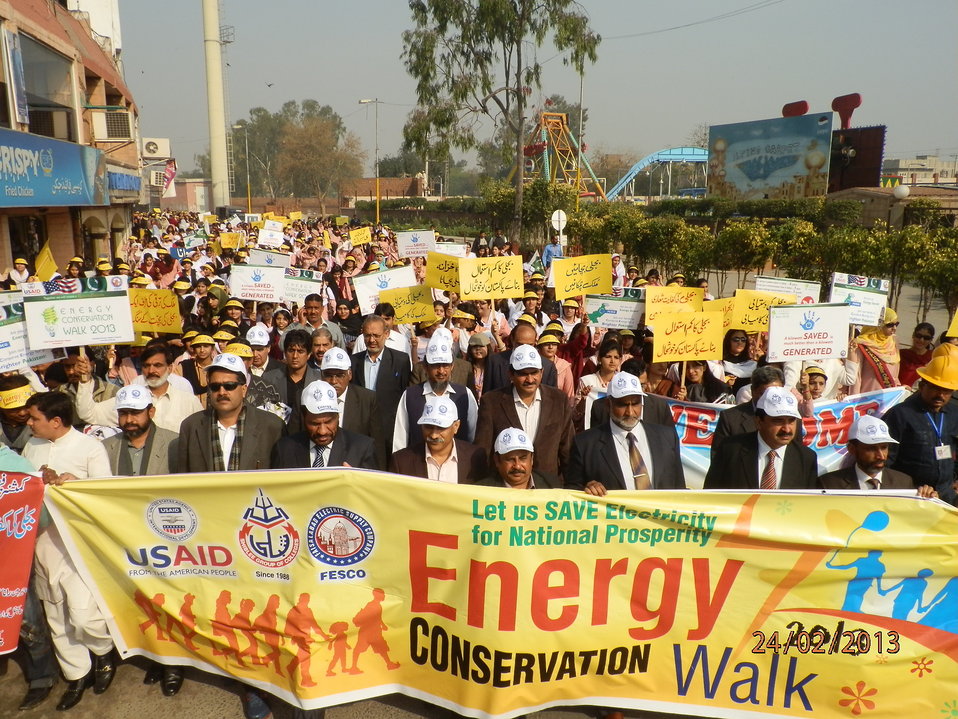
USAID organises Energy Conservation Walk in Faisalabad

USAID Power Distribution Program in collaboration with Faisalabad Electric Supply Compnay (FESCO) conducted an Eenergy Conservation Walk in Faisalabad to spread the awareness about significance of opting energy efficient ways in such times of energy crisis. A total of 4000 students from different institutions of FESCO operated region participated in this walk.

“I was unaware that keeping your TV on stand-by consumes 8KV of electricity. We all hope that all of us getting together would make the general population more aware of the benefits of energy conservation” Student from Faisalabad Fatima Zia